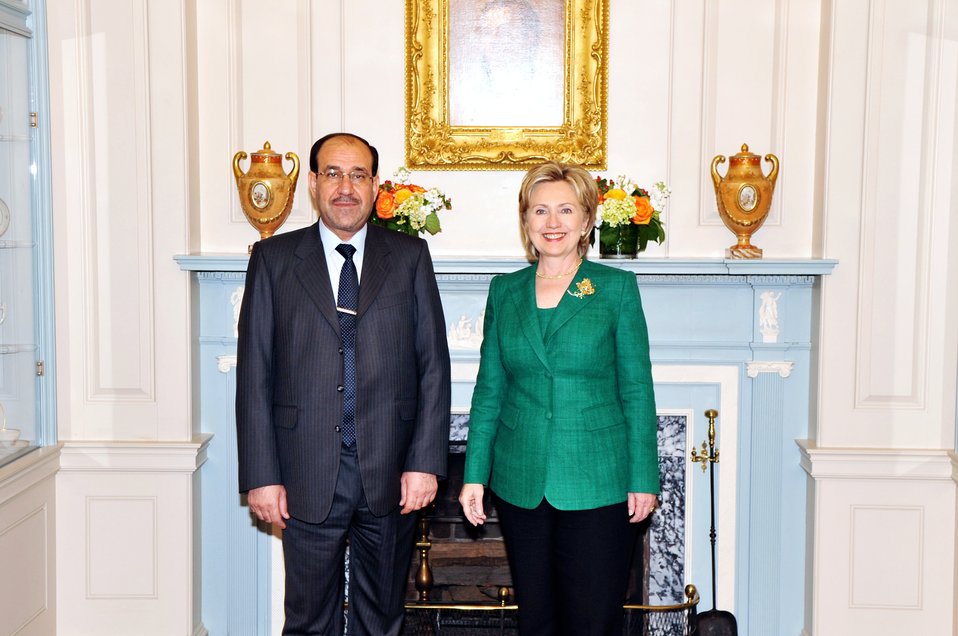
Secretary Clinton Holds Bilarteral Meeting with Iraqi Prime Minister

U.S. Secretary of State Hillary Rodham Clinton holds a press availability with His Excellency Nouri al-Maliki, Prime Minister of the Republic of Iraq at the U.S. Department of State in Washington, DC July 24, 2009.